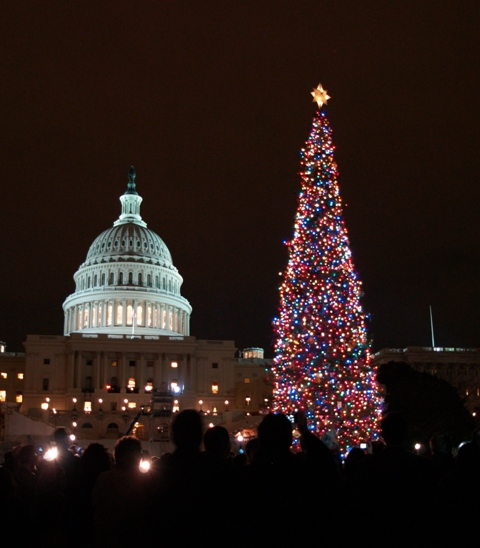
2009 Capitol Christmas Tree

This image of the 2009 Capitol Christmas Tree shows the final destination for this year's Tree, being harvested this weekend in Wyoming from the Bridger-Teton NF.'